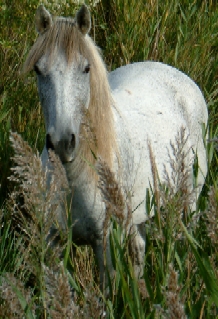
Deutsch: Camargue-Pferd aufgenommen in der Camargue ca. 5 km landeinwärts von Stes-Maries-de-la-Mer.